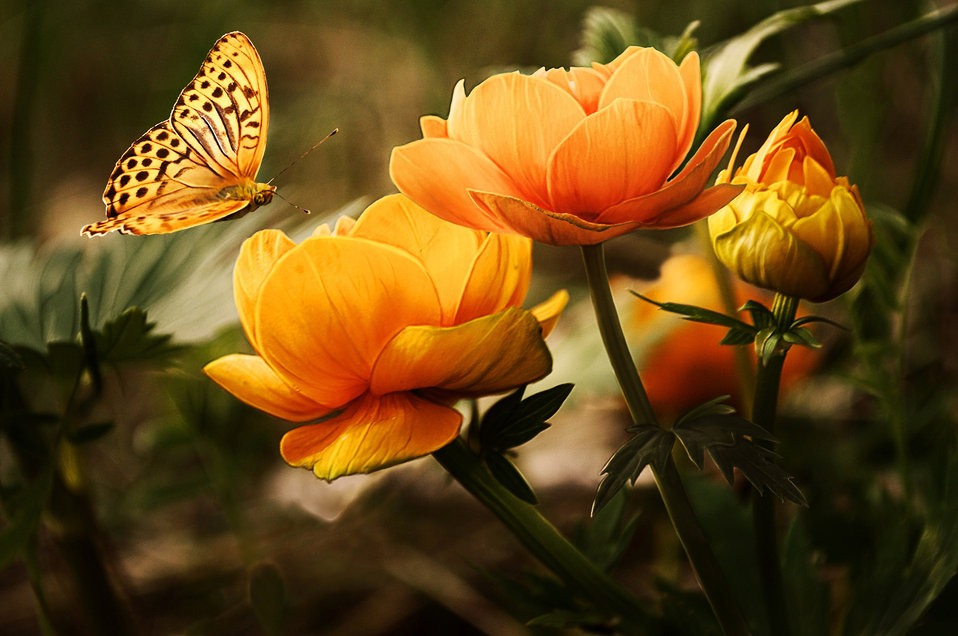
Background with flower and butterfly

Background with flower and butterflies..